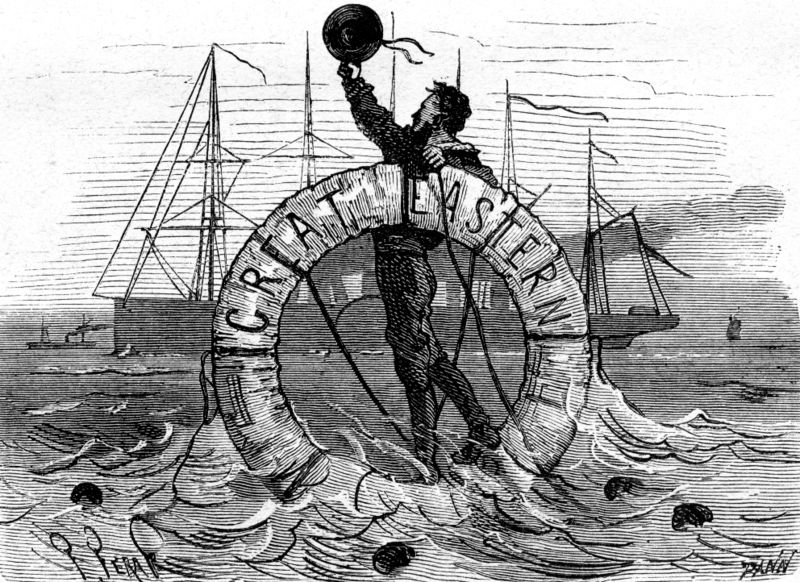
An illustration from Jules Verne's novel 'A Floating City' (1869) drawn by Jules Férat. Polski: Ilustracja powieści Juliusza Verne'a 'Pływające miasto' (1869) autorstwa Julesa Férata. Français : Jules Verne: 'Une Ville flottante' (1869), dessins par Jules Férat. Orginal text: